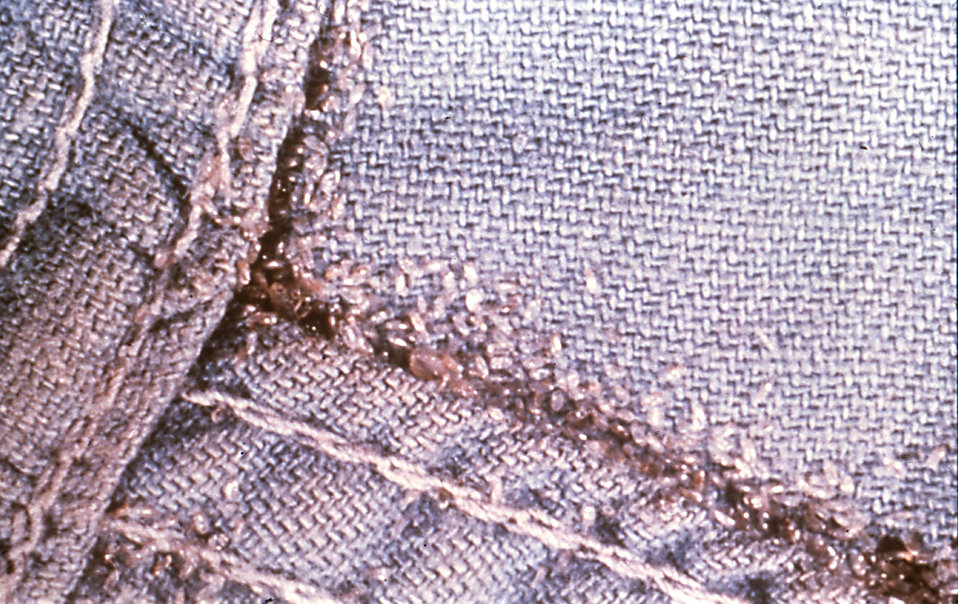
This is a piece of clothing the seams of which contained lice eggs from the body louse Pediculus humanus var. corporis.